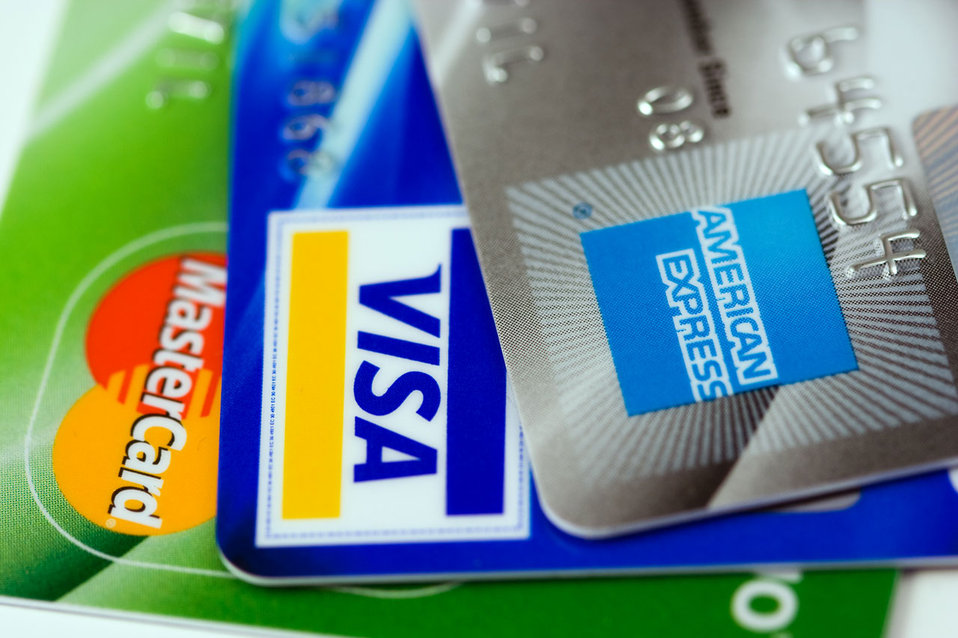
Three credit cards. visa, mastercard and american express.